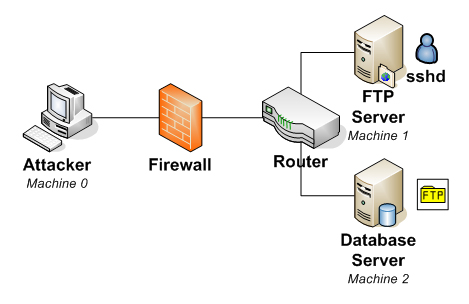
Secure Network

The example illustrates three paths that an attacker can take to penetrate the network using FTP server, SSH server or database server.